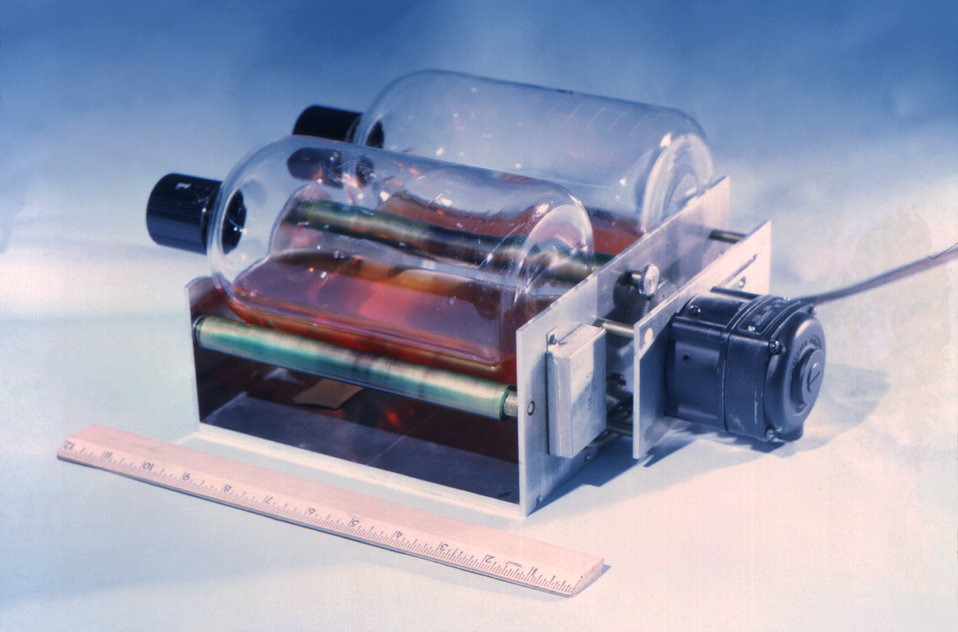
This historic 1966 image showed a roller apparatus used in the process of growing cell cultures. In this particular view, two glass blottles were on the roller machine containing cell growth media.